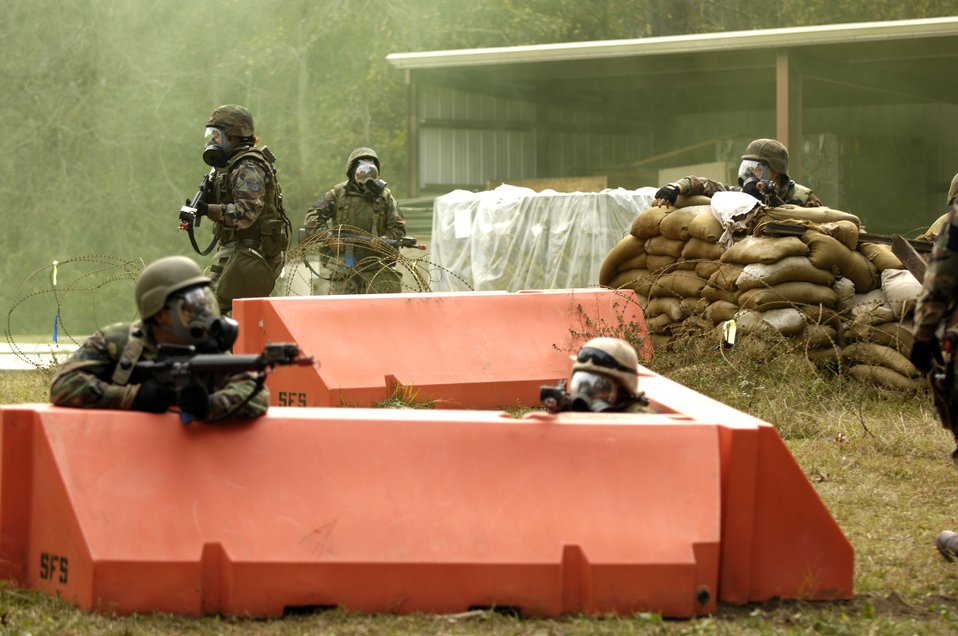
Testing their skills

Airmen don gas masks during a simulated gas attack while participating in the Expeditionary Combat Skills Training Dec. 7 at Charleston Air Force Base, S.C. The ECST is a three-day tactical operations course to prepare mmbers of the 437th Airlift Wing for deployment.